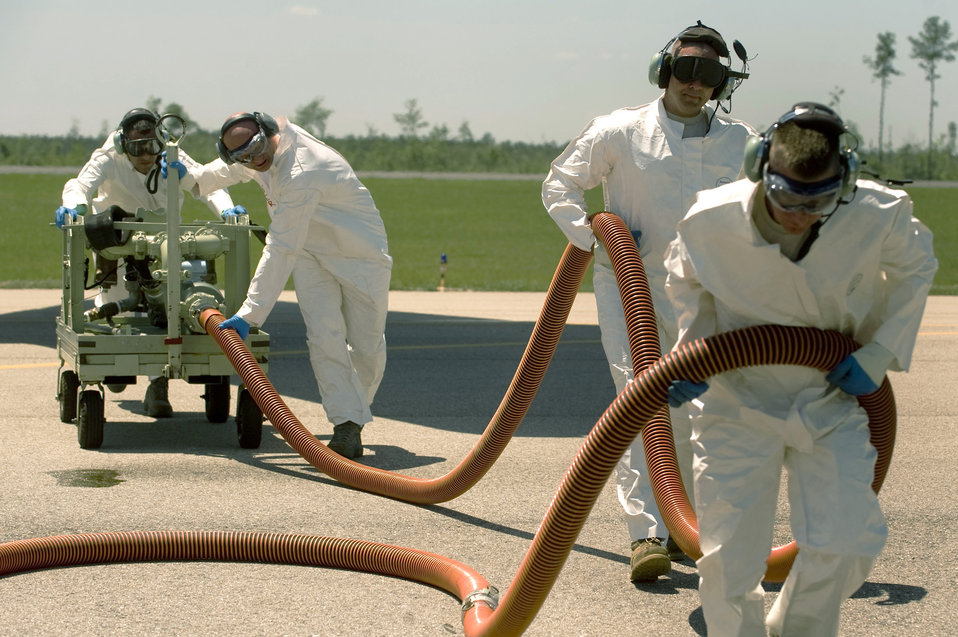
Deepwater Horizon

A team of Airmen refill a chemical dispersing C-130 Hercules May 4, 2010, at Stennis International Airport in Kiln, Miss. Members of the Air Force Reserve Command's 910th Airlift Wing are in Mississippi to assist with the Deepwater Horizon oil spill. The team of aerial spray aircraft maintainers are from the 910th Aircraft Maintenance Squadron at Youngstown-Warren Air Reserve Station, Ohio.